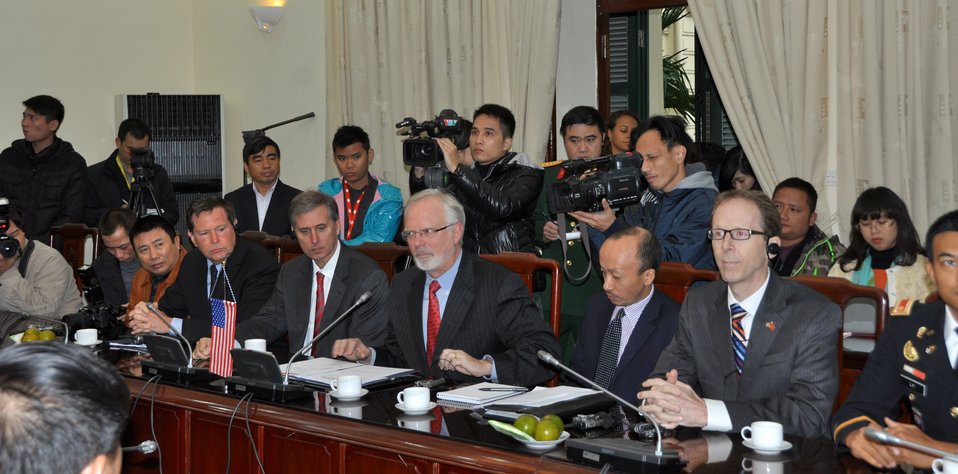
The United States and Vietnam sign an MOU on unexploded ordnance (UXO) cooperation

Hanoi, December 16, 2013.